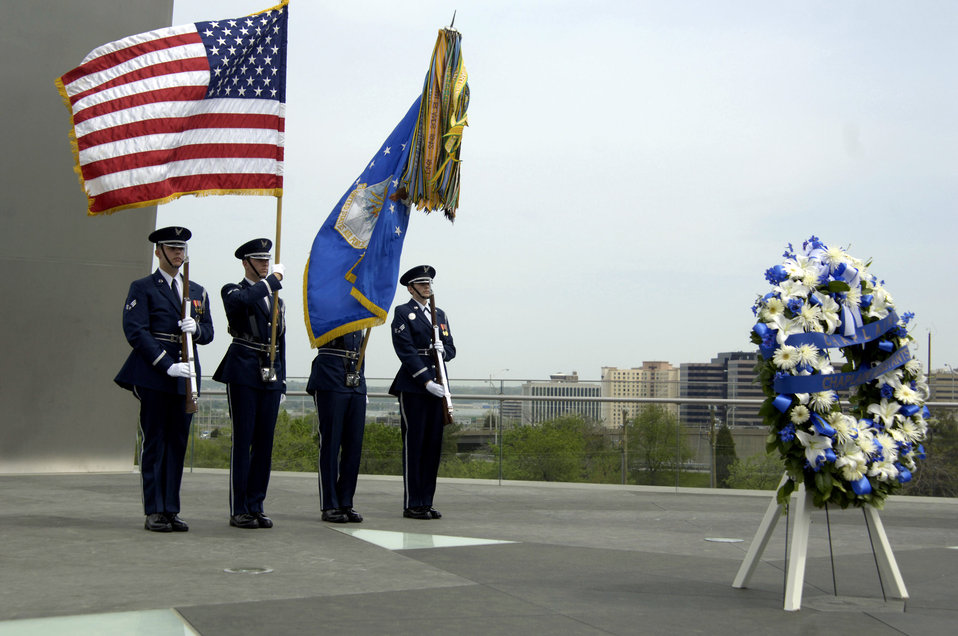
Air Force chaplains join together for memorial service

Members of the U. S. Air Force Honor Guard participate in a special wreath ceremony at the Air Force Memorial in Arlington, Va., April 25 to honor chaplains and chaplain's assistants.